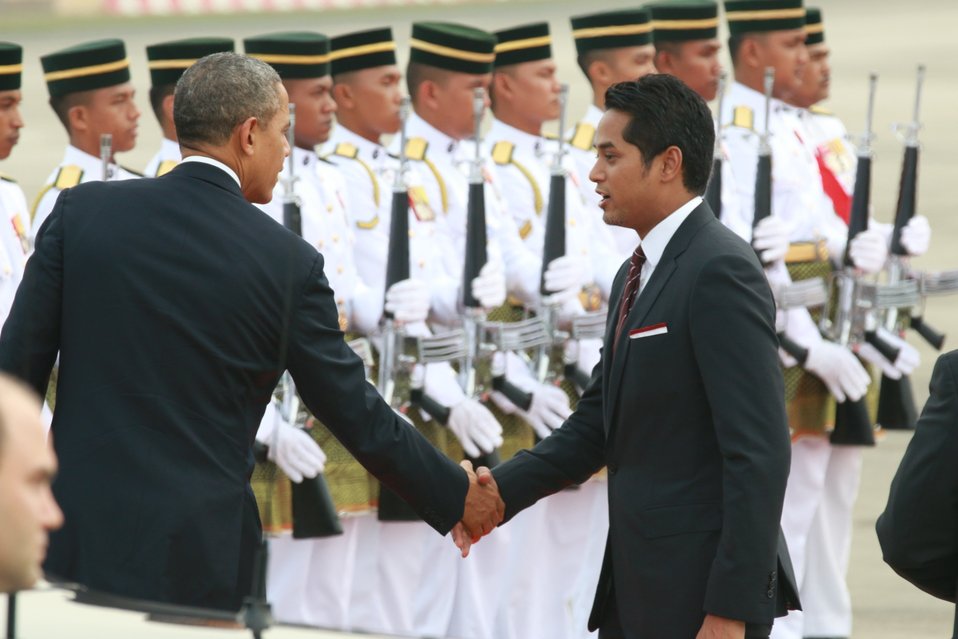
President Obama Prepares to Depart Kuala Lumpur

U.S. President Barack Obama shakes hands with a Malaysian official before departing Kuala Lumpur, Malaysia, on April 27, 2014.